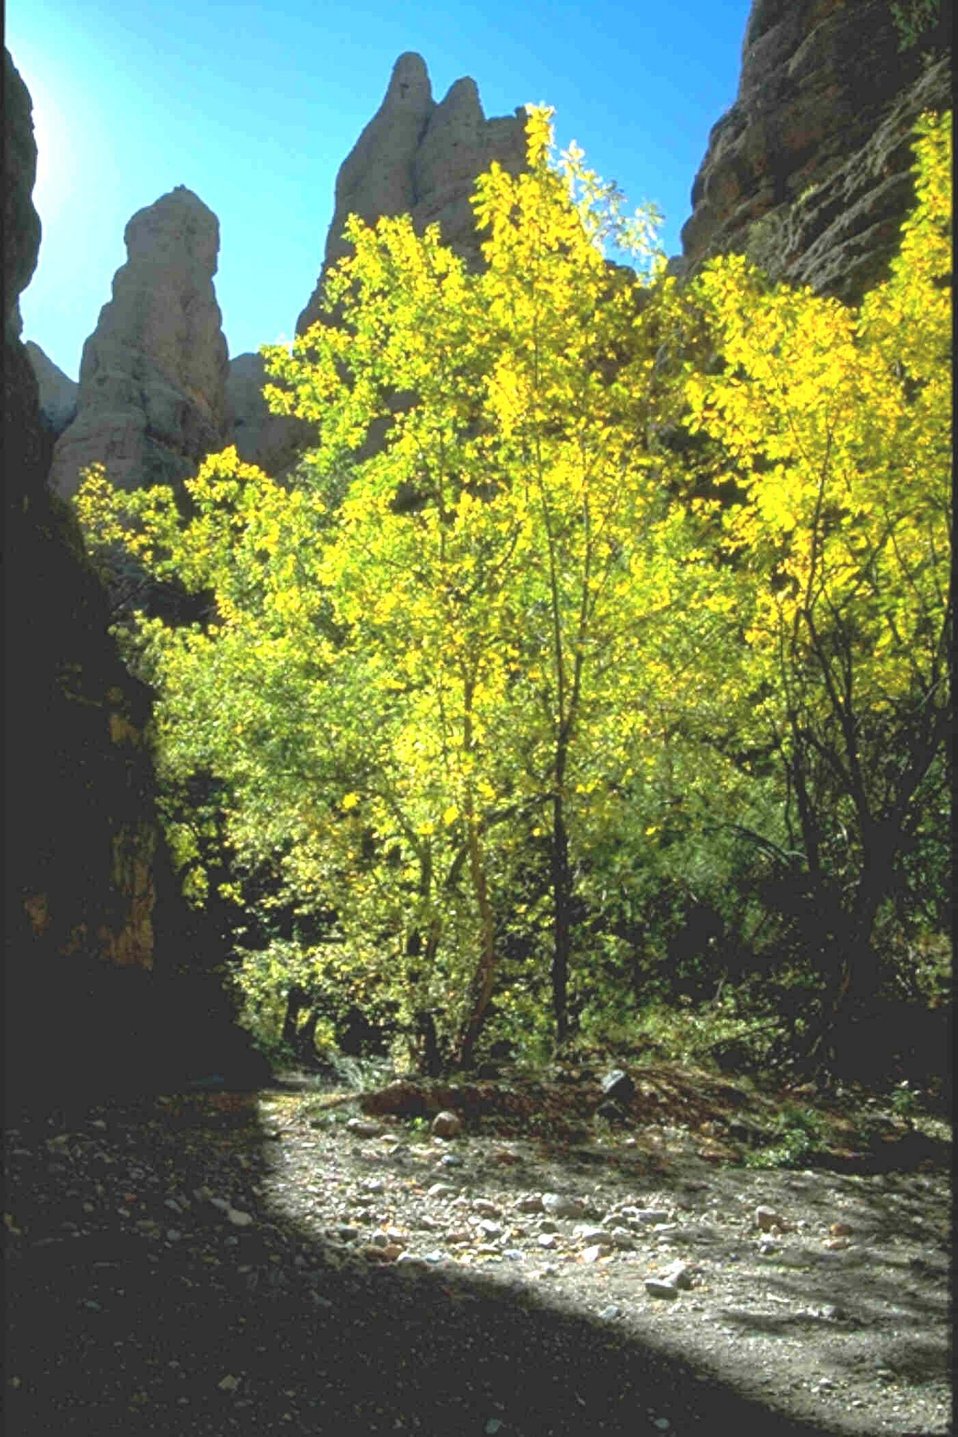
The spires in Hell Hole make an eerie backdrop for a burst of fall autumn gold.